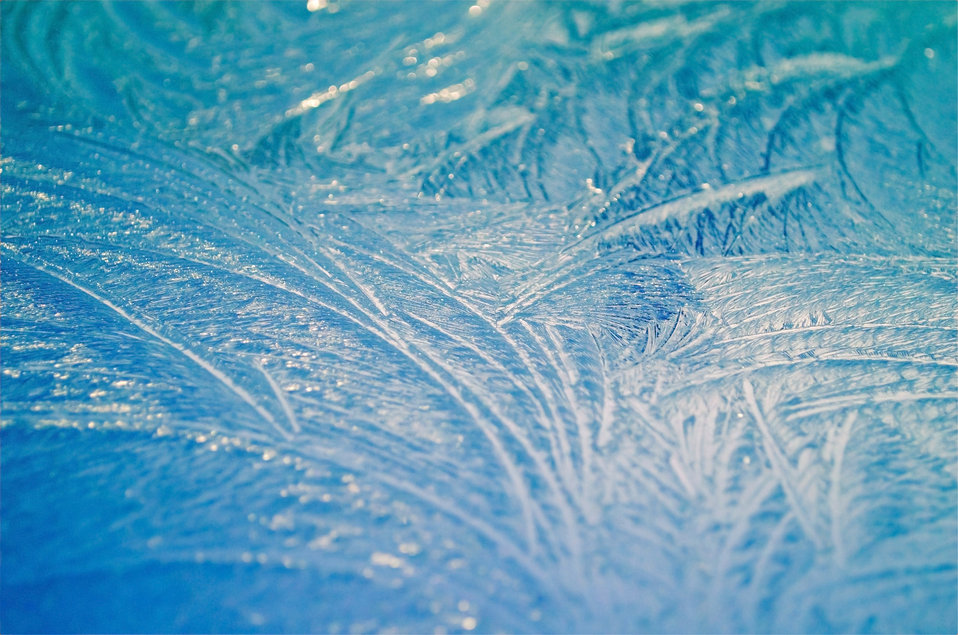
Morning frost.